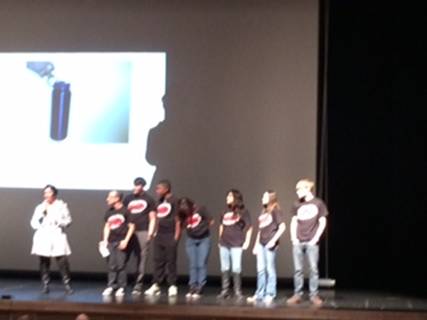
NDFW Event with SADD

Students Against Destructive Decisions (SADD)
presented an assembly with guest speaker Amy Bollaert, Coordinator of the Fairbanks Prevention Coalition, as part of SADD's 'Signature Events' program in Fairbanks, Alaska